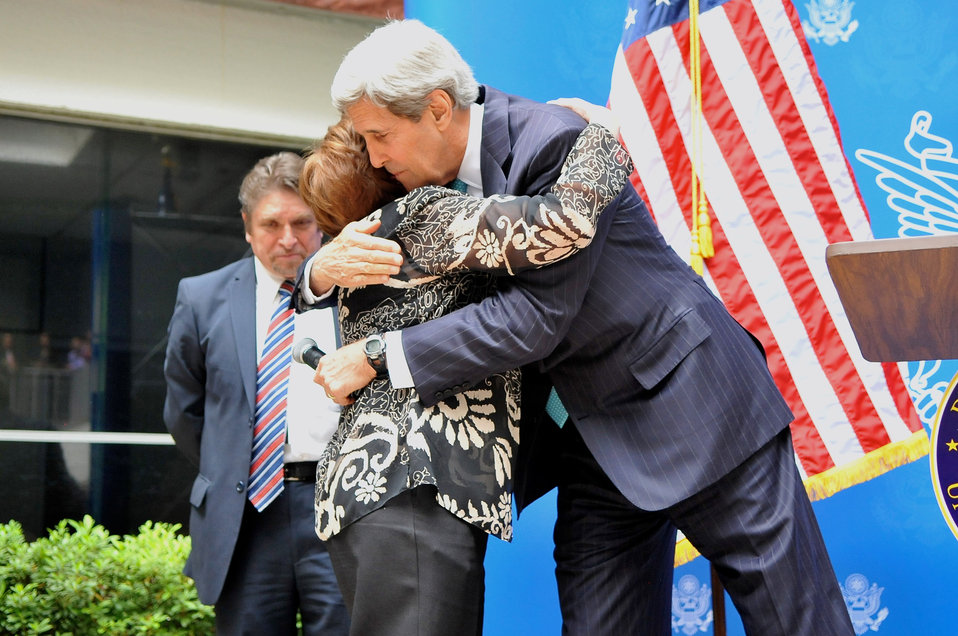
Secretary Kerry Greets Longtime Embassy Mexico City Employee Alvarado

U.S. Secretary of State John Kerry, during his visit to Mexico, hugs Ana Elena Tappan Alvarado in recognition of the 42 years she and Arturo Montano Robles, background, have spent working at U.S. Embassy Mexico City, May 21, 2014.